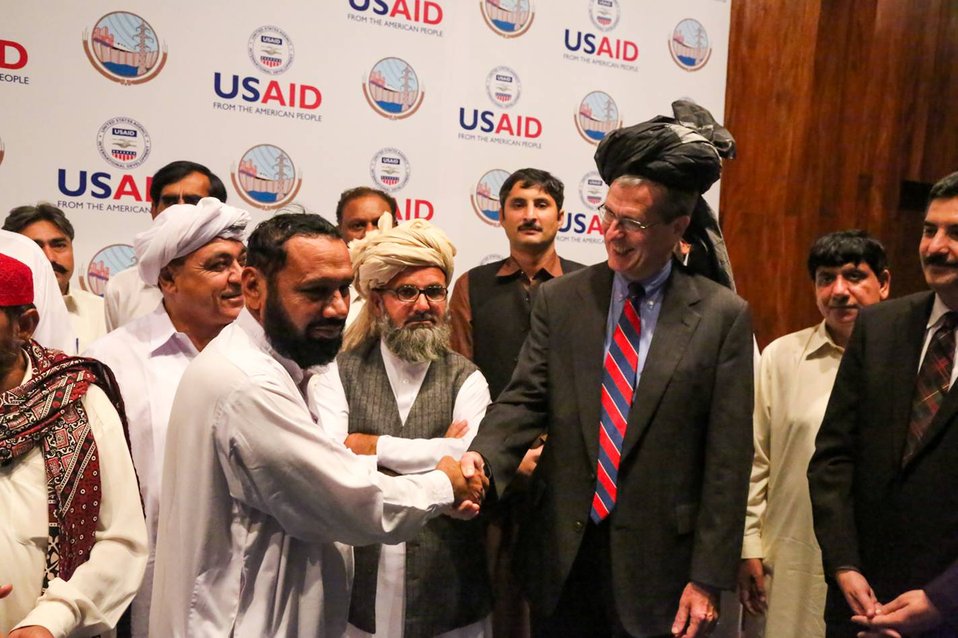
Islamabad, September 12, 2012 - Project Launch Ceremony of Waran Canal Irrigation System